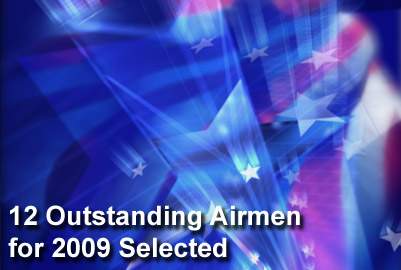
Air Force officials name 12 Outstanding Airmen of the Year

Air Force officials selected the service's top enlisted members, naming the 12 Outstanding Airmen of the Year for 2009.